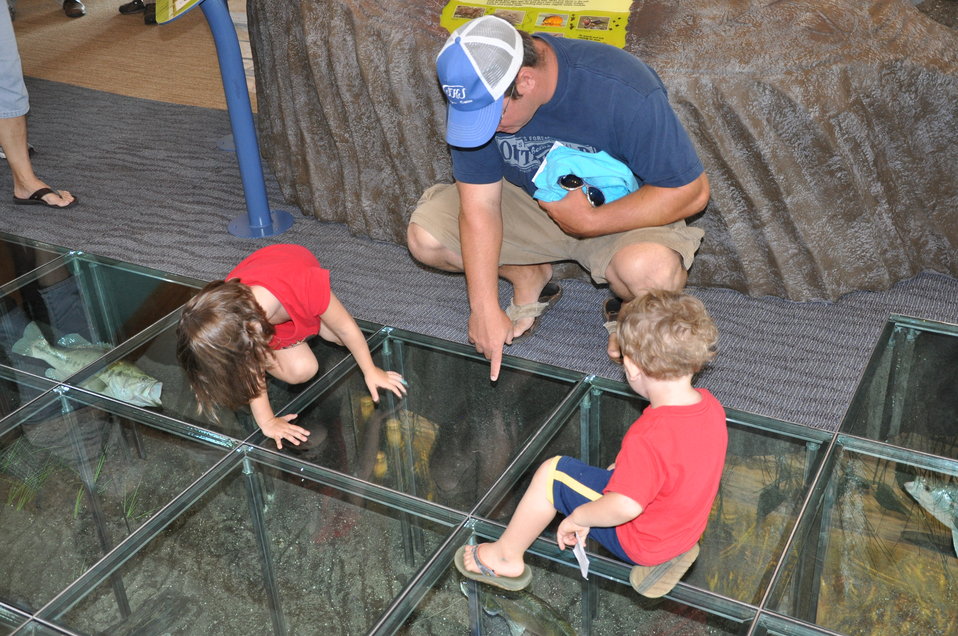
Glass floor at La Crosse visitor center